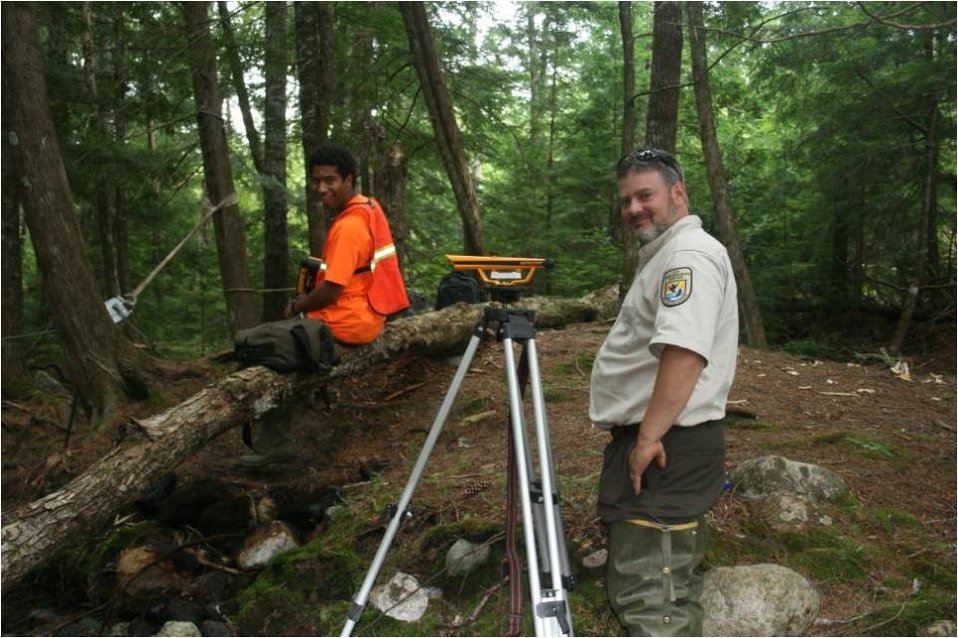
Wildlife surveys at the Maine Fishery Resources Office.